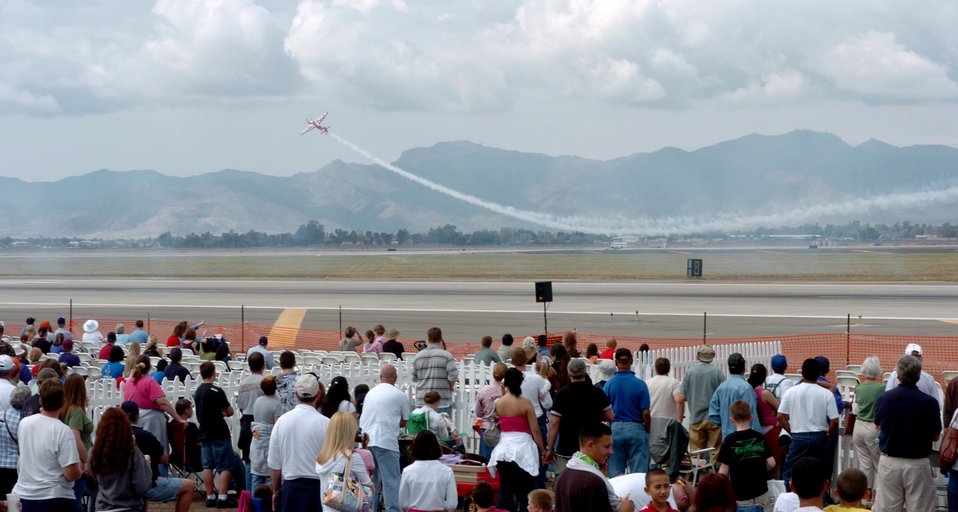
Air Force Week